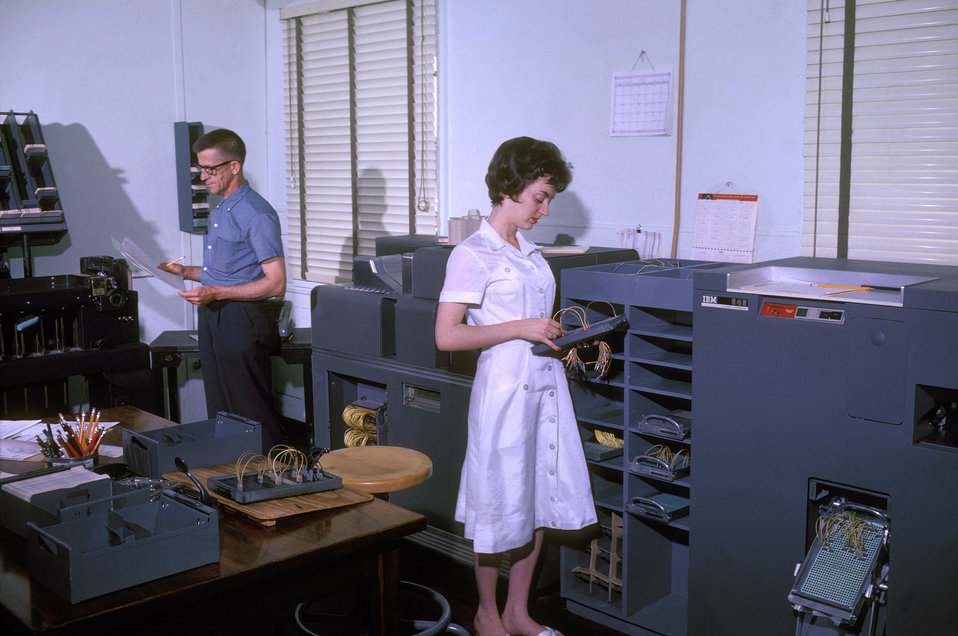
This 1962 photograph showed an unidentified man and woman from the Centers for Disease Control's Tuberculosis Branch while they were at work inside the 'IBM room' of the organization's Chamblee, Georgia campus. This room housed the IBM 548-Alphabetic Interpreter used in data collection exercises.